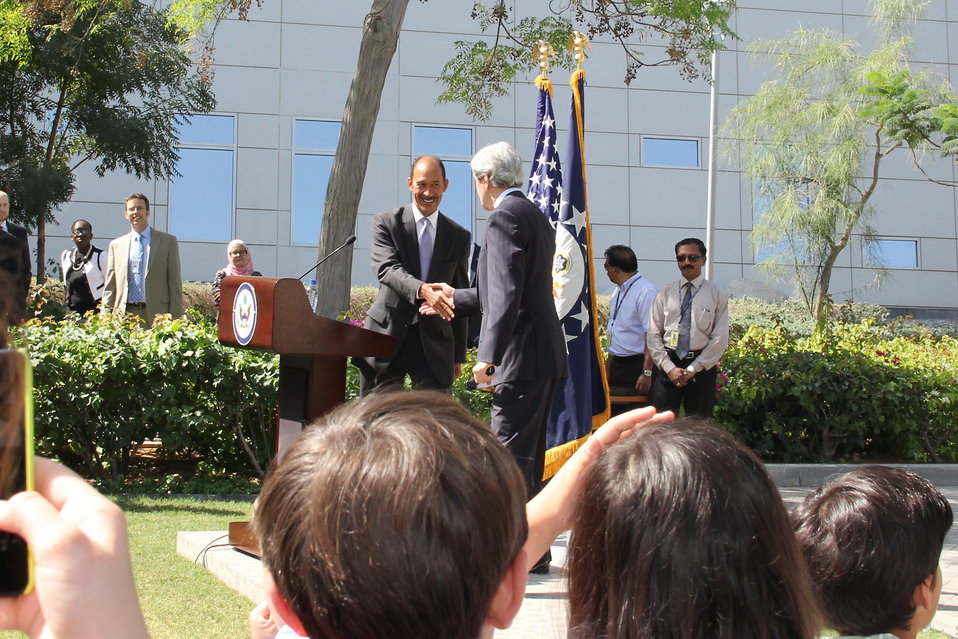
Ambassador Corbin Introduces Secretary Kerry to the Staff and Families of Embassy Abu Dhabi

U.S. Ambassador to the United Arab Emirates Michael Corbin introduces U.S. Secretary of State John Kerry to the staff and families of the U.S. Embassy in Abu Dhabi, United Arab Emirates, on March 5, 2013.